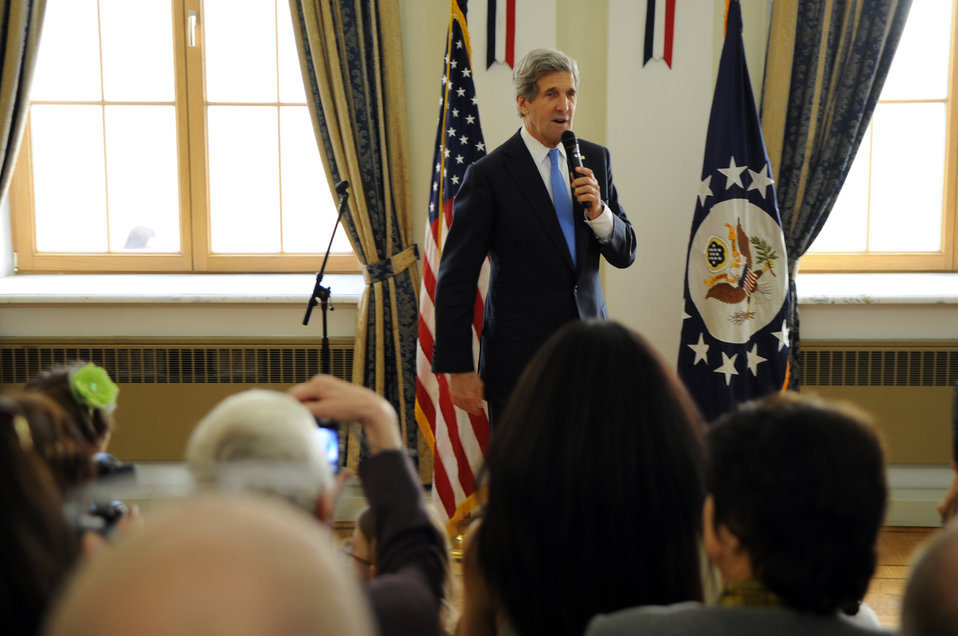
Secretary Kerry Speaks With Embassy Moscow Staff and Families

U.S. Secretary of State John Kerry speaks with the staff and families of Embassy Moscow at the U.S. ambassador's residence, the Spaso House, in Moscow, Russia, on May 8, 2013.